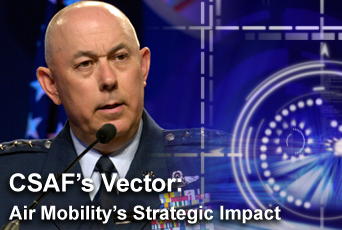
Latest 'Vector' remembers Berlin Airlift

Gen. T. Michael Moseley discusses the importance of air mobility from the Berlin Airlift to today in the latest Chief of Staff's Vector.